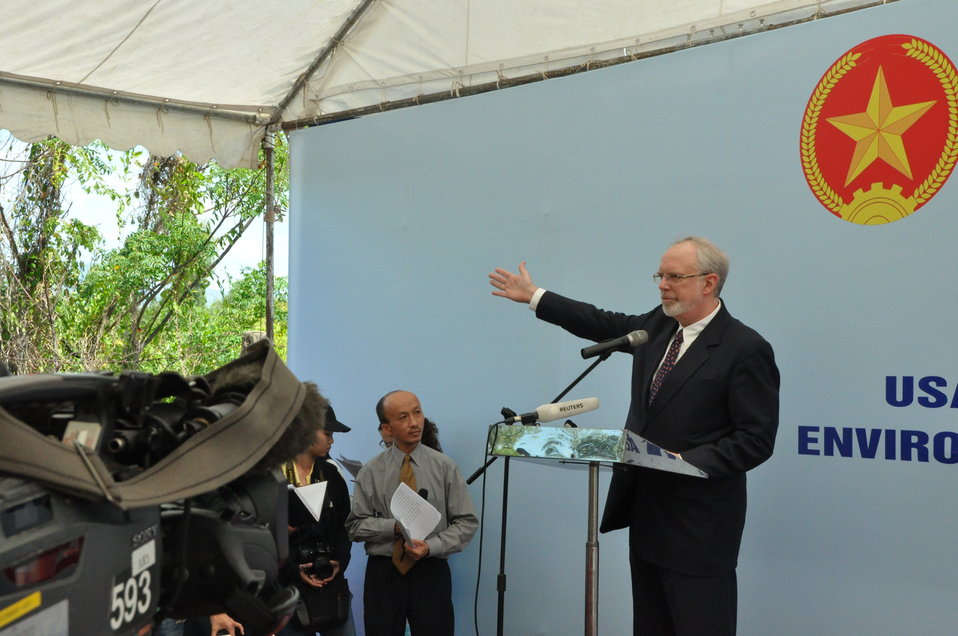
U.S. Ambassador David B. Shear speaks at the Environmental Remediation of Dioxin Contamination at Danang Airport Project Launch

Danang, August 9, 2012